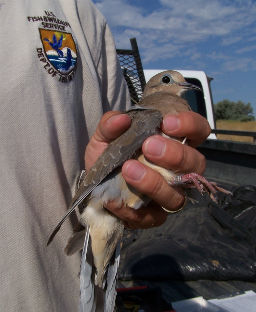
Dove Banding

Mourning dove with a new band ready for release. Dove Banding on Bowdoin NWR